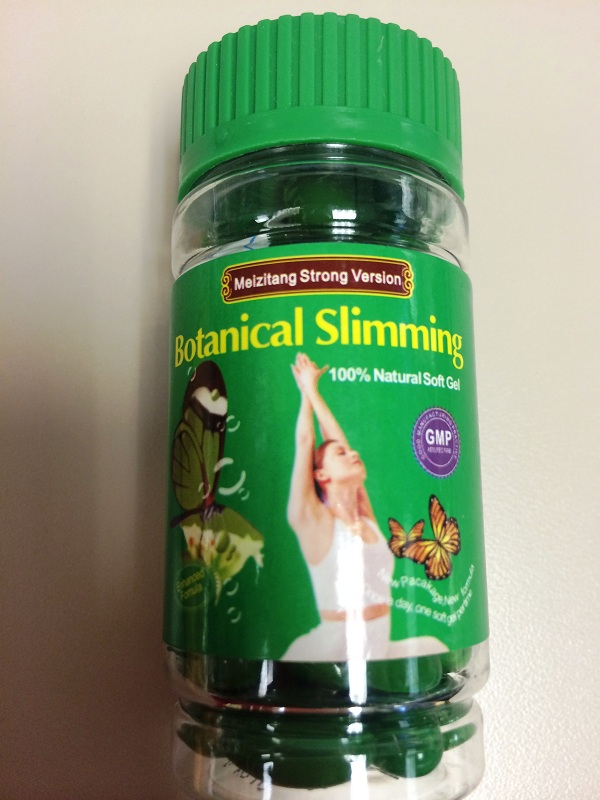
RECALLED - Reduce Weight Fruta Planta

February 4, 2014 – Product Recall – MyNicKnaxs, LLC. Issues a Voluntary Nationwide and International Recall of All Weight Loss Formulas of Reduce Weight Fruta Planta.